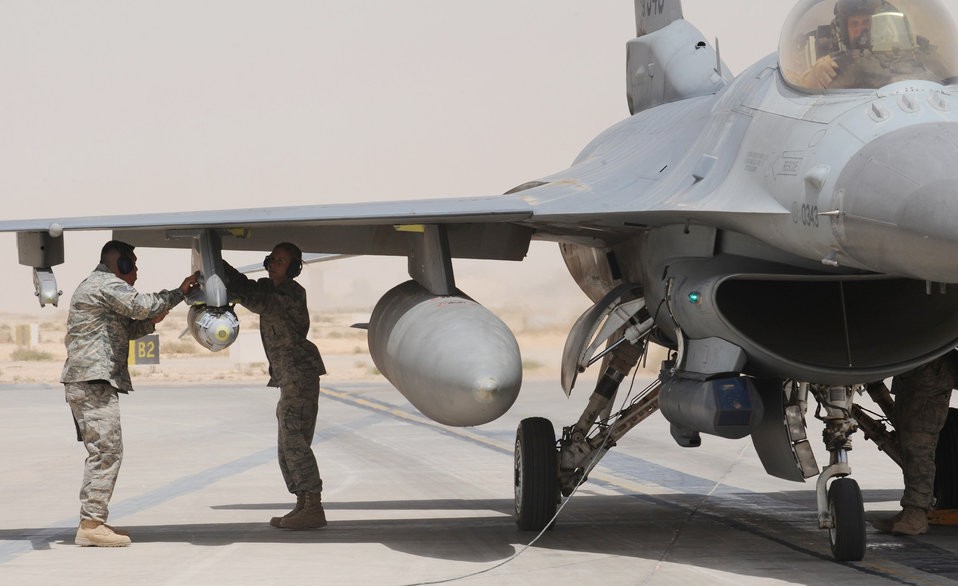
Weapons loaders arm jets for the fight

Staff Sgt. David Yocom and Senior Airman Nadja Ainsworth make the final check and pull the safety pins from weapons loaded onto an F-16 Fighting Falcon before takeoff June 29 at Joint Base Balad, Iraq. Sergeant Yocom is a 332nd Expeditionary Aircraft Maintenance Squadron weapons load crew chief, and is a native of Oldbridge, N.J. Airman Ainsworth is a 332nd EAMXS weapons loader from Puyallup, Wash. Both are deployed from Spangdahlem Air Base, Germany.